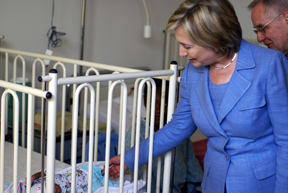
Secretary Clinton Visits Mutombo Hospital

U.S. Secretary of State Hillary Rodham Clinton visits the Biamba Marie Mutombo Hospital in Kinshasa, Democratic Republic of Congo August 10, 2009.